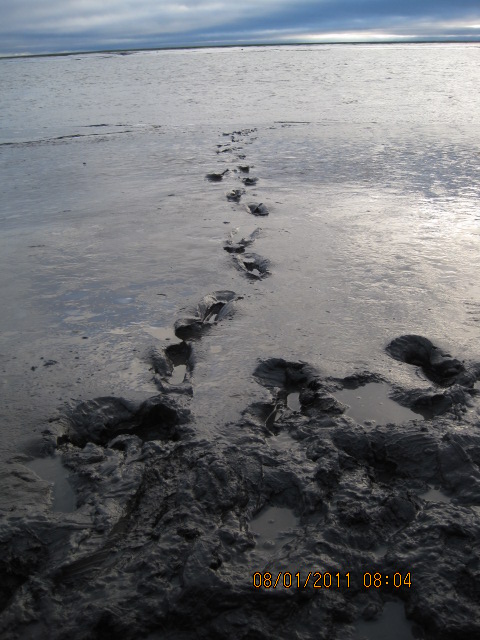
Mud

The mud found on the bottom sloughs and ponds can be quite sticky.

USFWS Yukon Delta NWR